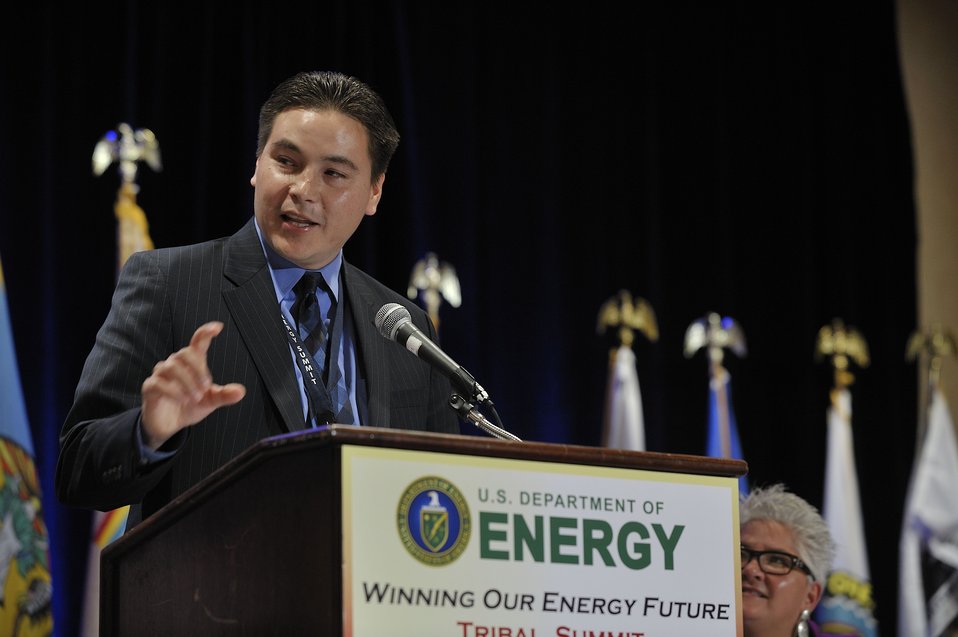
Tribal Energy Summit

DOI-BIA Principal Deputy Assistant Secretary Mr. Del Laverdure addresses the Summit during the federal interagency panel